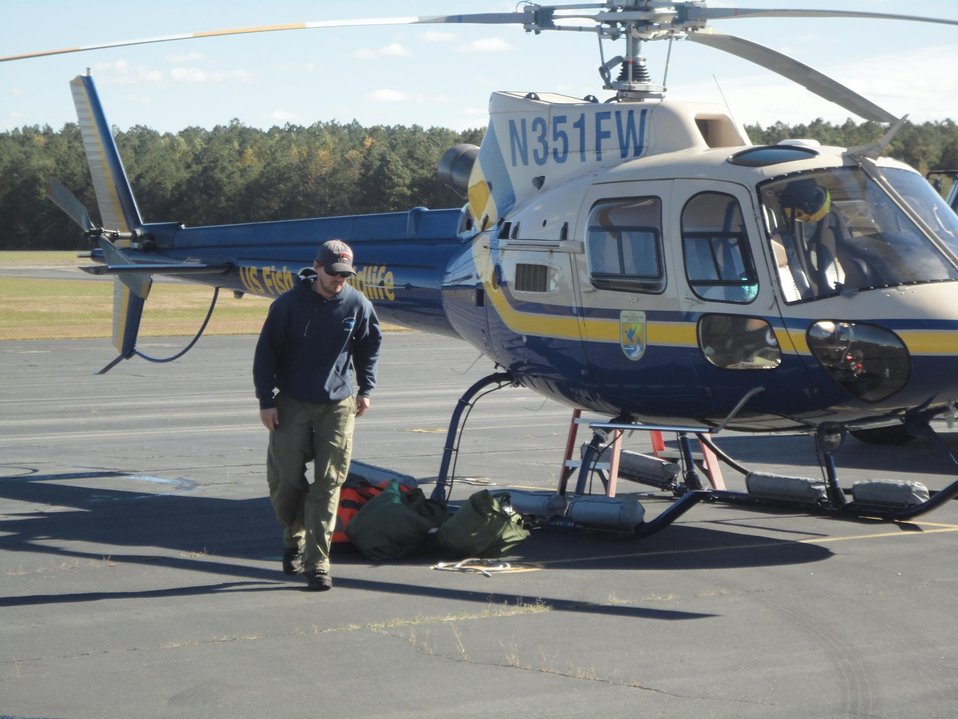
Responding to Hurricane Sandy (VA)

A U.S. Fish and Wildlife Service staff member is preparing to help gather aerial images to assess storm impacts at Service stations that are in the hurricane affected areas.